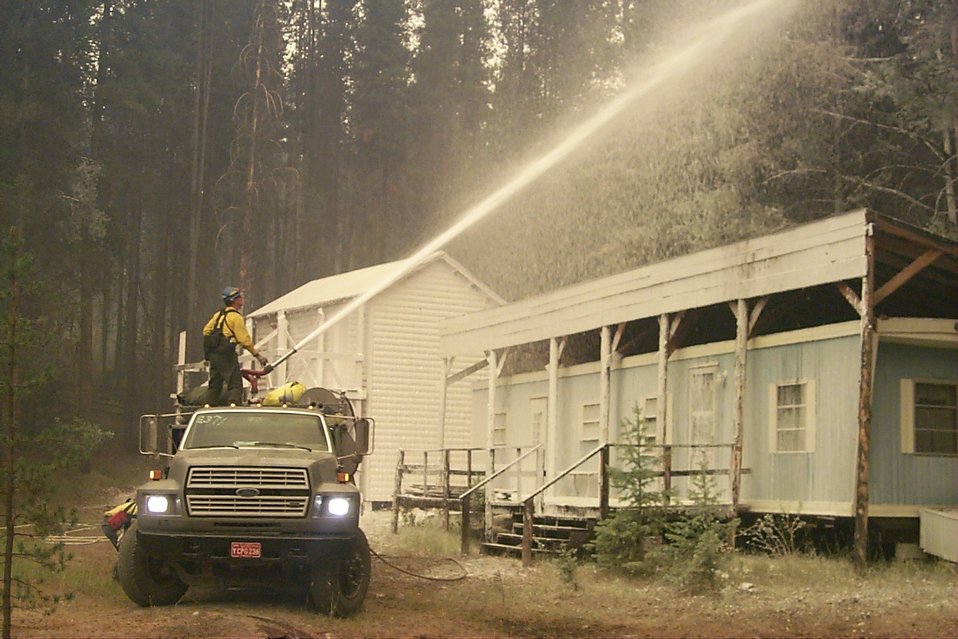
Fire retardant measures Urban interface Fire Clearwater Fire Salmon Field Office USRD Upper Snake River District